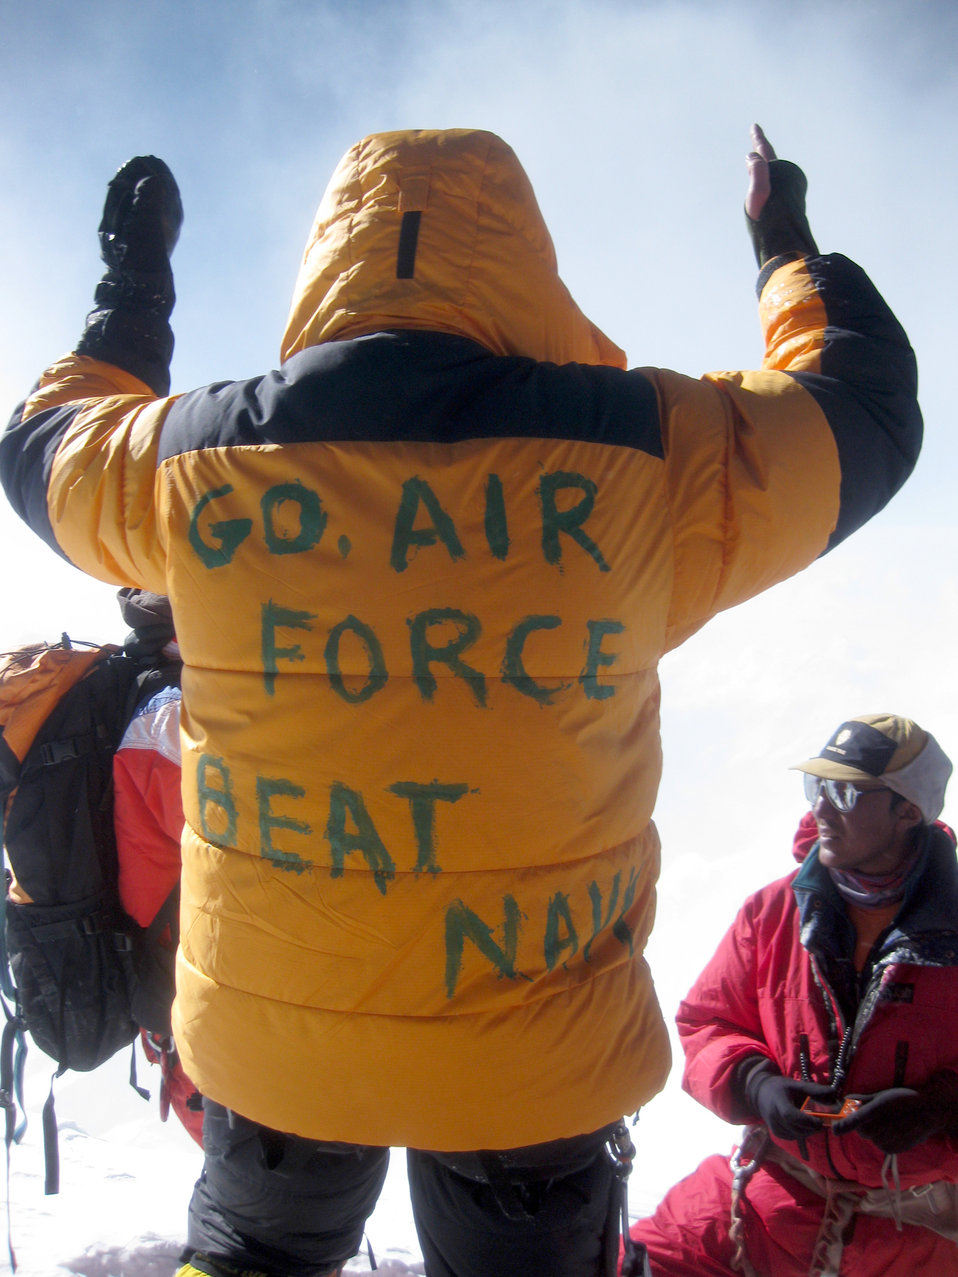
Airman scales Mount Everest

Lt. Col. Peter Solie celebrates at the summit of Mount Everest May 17, 2010, in Nepal. Colonel Solie unveiled his